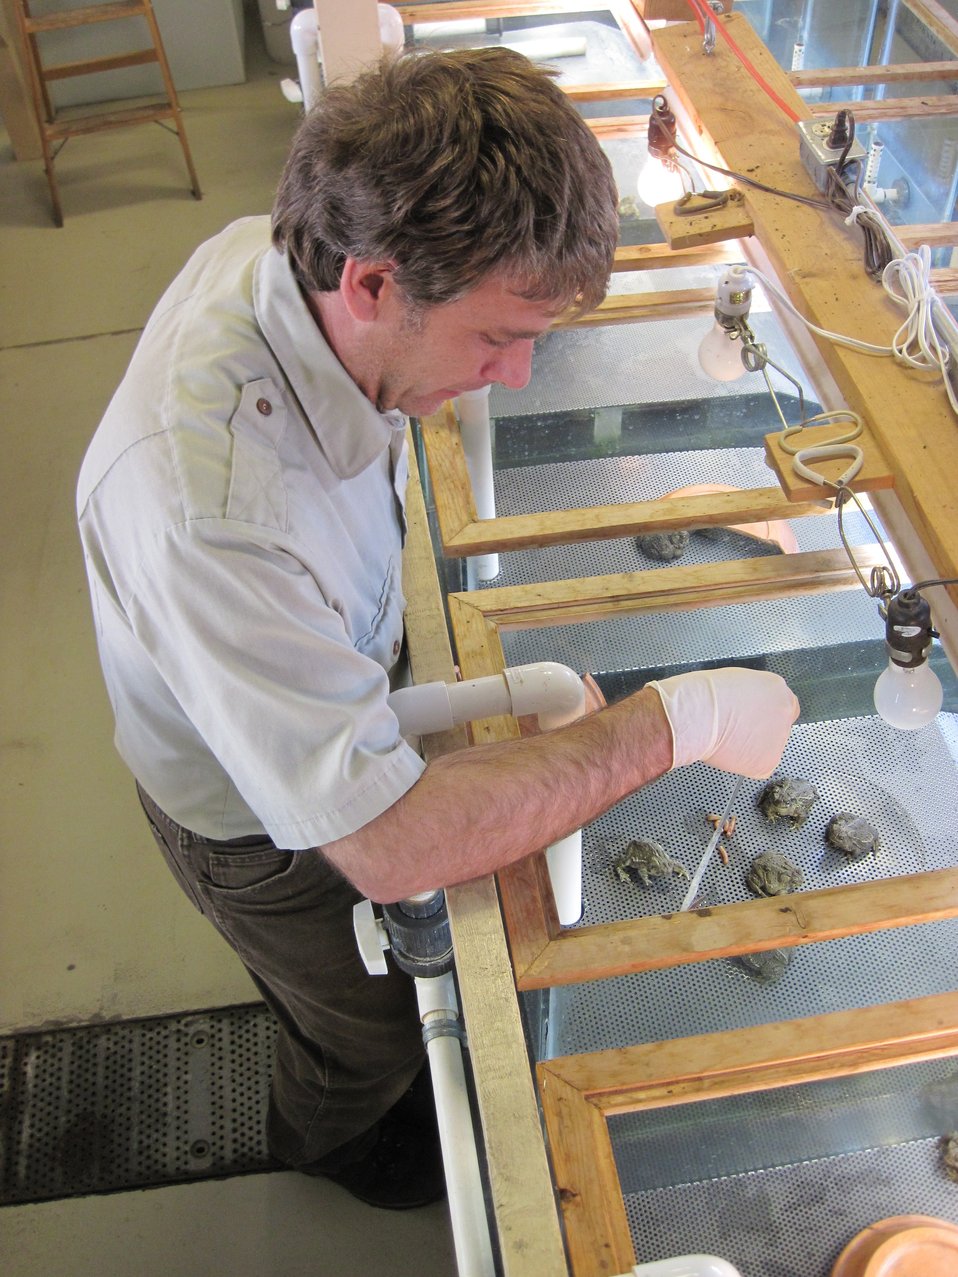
Wyoming Toad at Saratoga NFH

Saratoga National Fish Hatchery biologist feeds endangered Wyoming toads live worms.